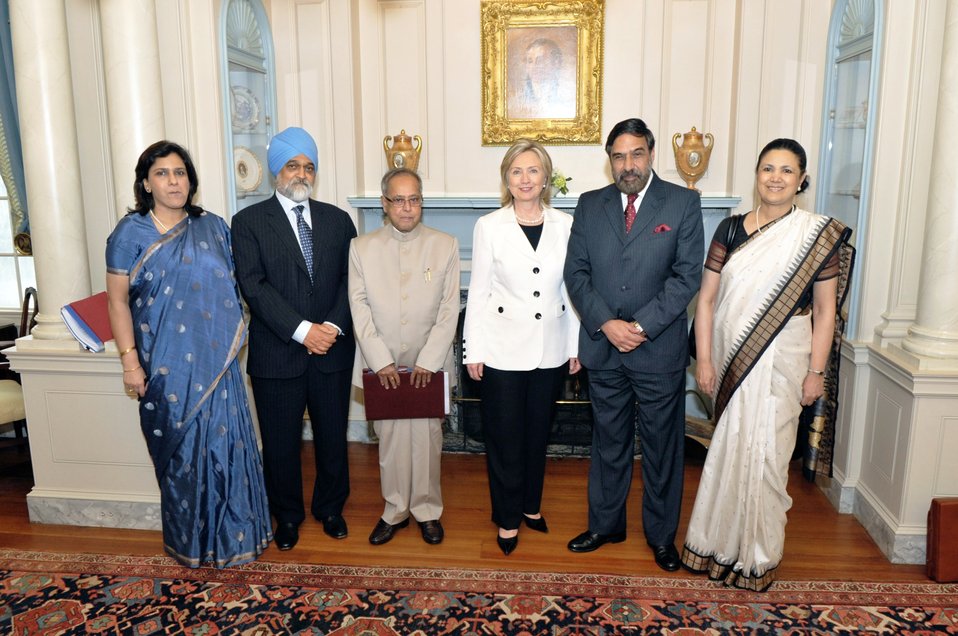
Secretary Clinton With Indian Ministers and Ambassador

(Left to right): Indian Joint Secretary Gaitri Kumar, Indian Deputy Chairman of the Planning Commission Montek Singh Ahluwalia, Indian Finance Minister Pranab Mukherjee, U.S. Secretary of State Hillary Rodham Clinton, Indian Commerce Minister Anand Sharma, and Indian Ambassador to the U.S. Meera Shankar pose for a photo at the U.S. Department of State in Washington, D.C., on June 22, 2010.